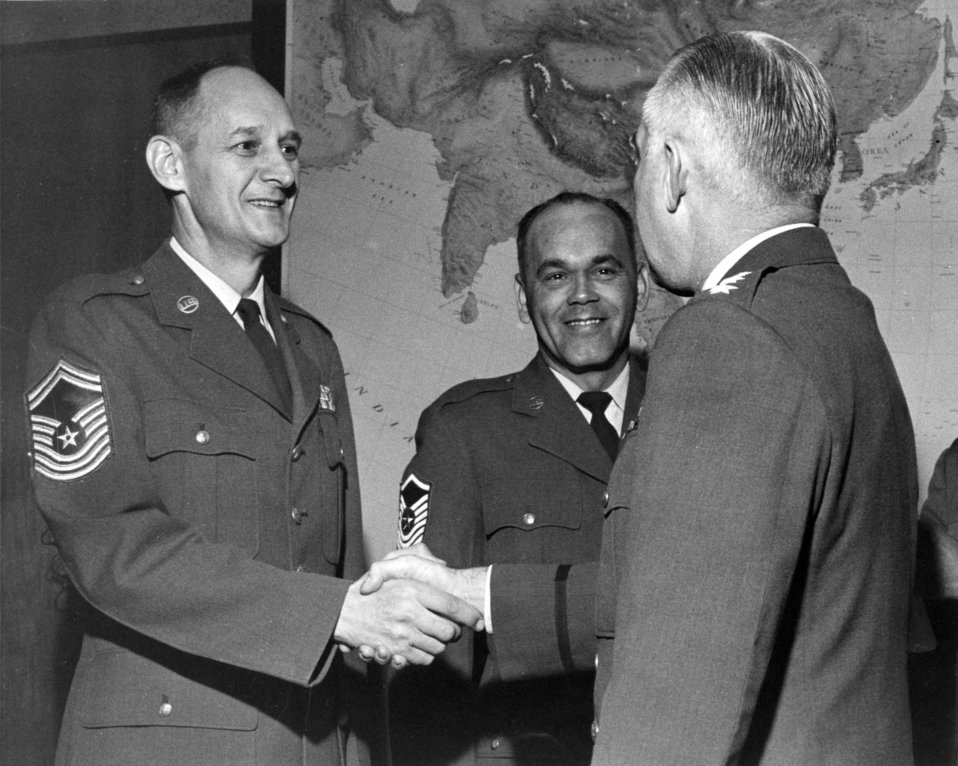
Retired Chief Master Sgt. Francis Collier

Chief Master Sgt. Francis Collier (left) receives a handshake from Lt. Gen. Robert W. Burns, the 5th Air Force commander, upon his promotion to the “new grade” of chief master sergeant Dec. 1, 1959. Collier was one of 625 Airmen promoted to the new super grade of chief master sergeant as a result of the Career Compensation Act of 1958.